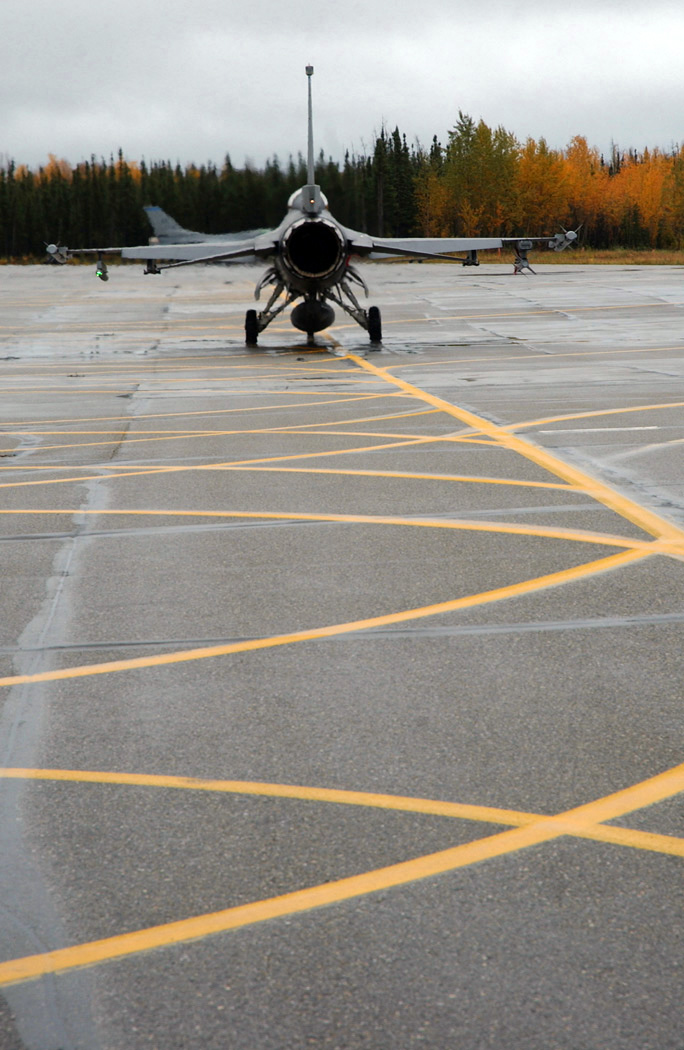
EIELSON AIR FORCE BASE, Alaska -- An F-16 Fighting Falcon with the 18th Fighter Squadron here taxis for a flight Sept. 8.